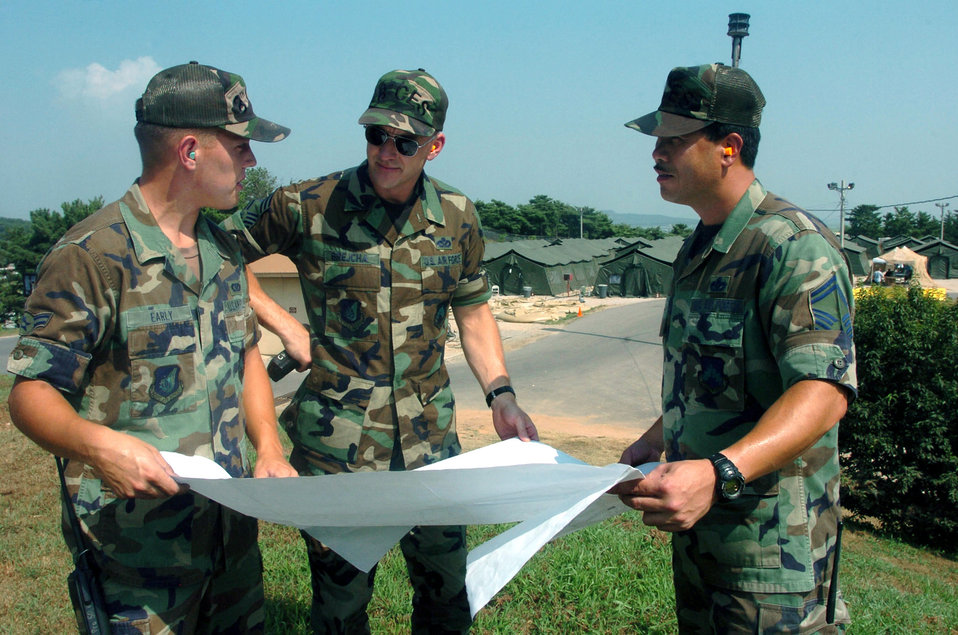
CE benefits from Nighthawk deployment

KUNSAN AIR BASE, South Korea -- (From left) Airman 1st Class David Early updates Chief Master Sgt. Mark Brejcha and Senior Master Sgt. Manny Lapuz about the daily upkeep of tent city. They are assigned to the 8th Civil Engineer Squadron here. Civil engineers are providing a home for about 300 Airmen who are deployed here from the 49th Fighter Wing at Holloman Air Force Base, N.M.